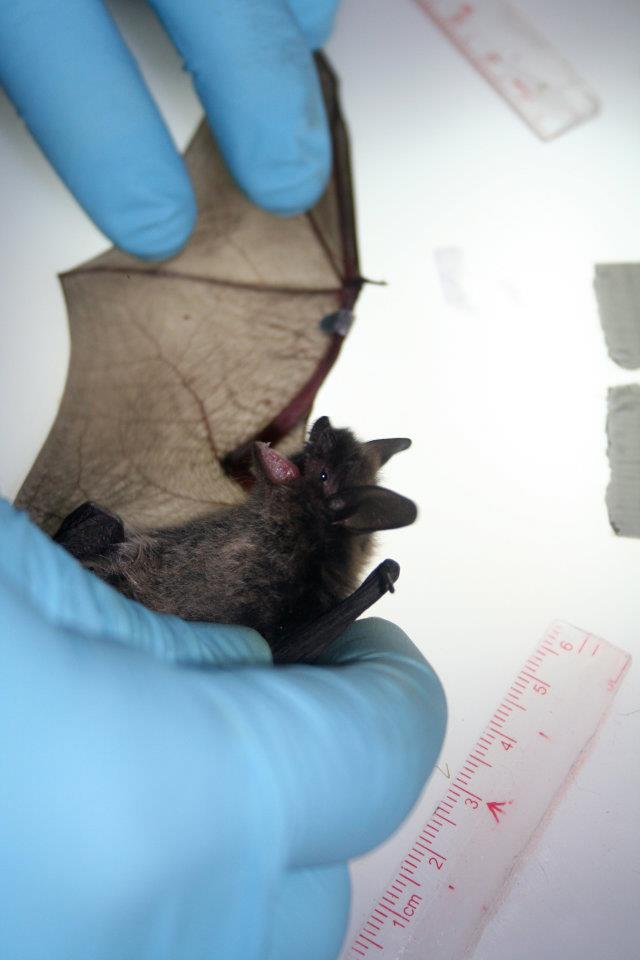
BU researcher inspects bat wing